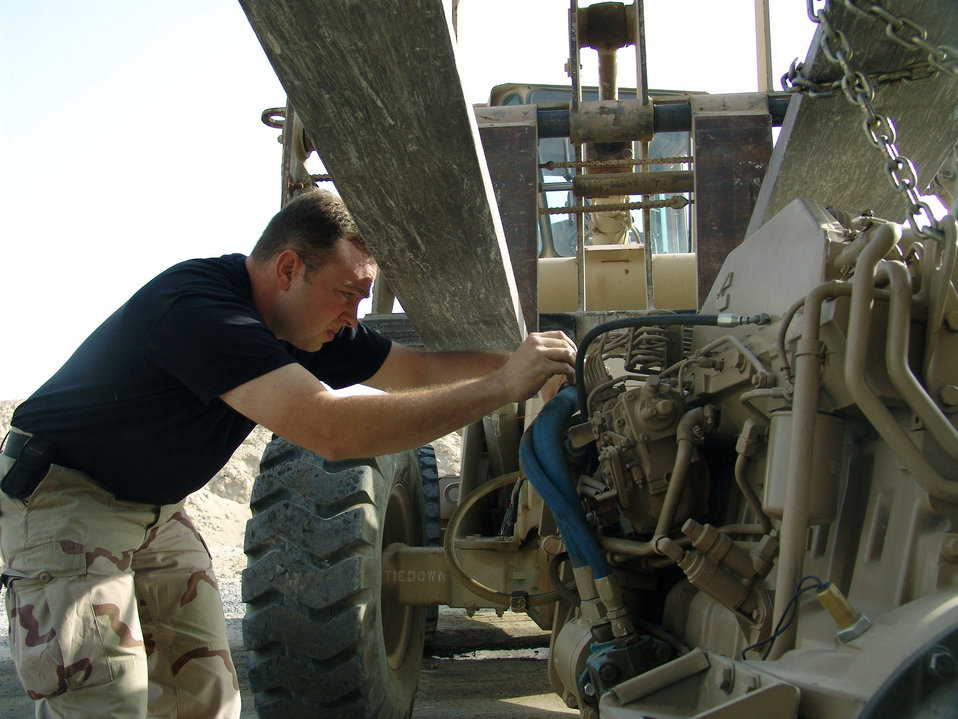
Fix it, fellas

SOUTHWEST ASIA -- Master Sgt. Michael Bares, with the help of a forklift, installs a 1,700-pound engine in a refueling truck at a forward-deployed location. Sergeant Bares and other Airmen of the 386th Expeditionary Logistics Readiness Squadron's vehicle maintenance flight repair nearly 180 vehicles a month.